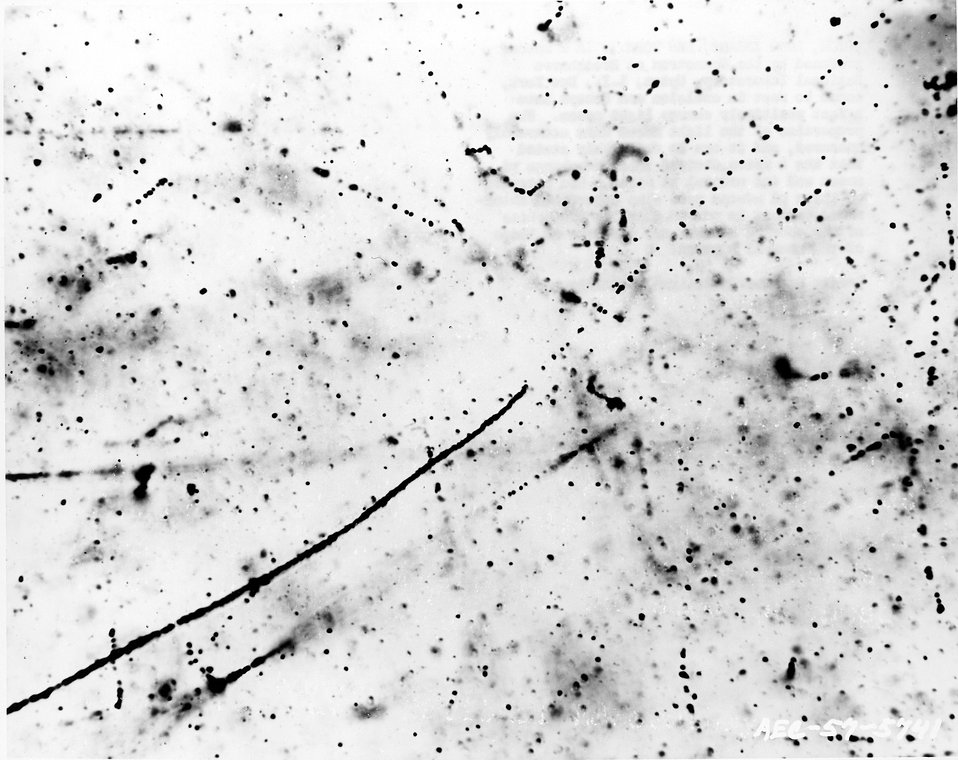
A k meson produced by the Cosmotron at Brookhaven National Laboratory, Upton, L.I., New York, comes to rest in emulsion and decays into a fast positively charge light meson. c. 1957